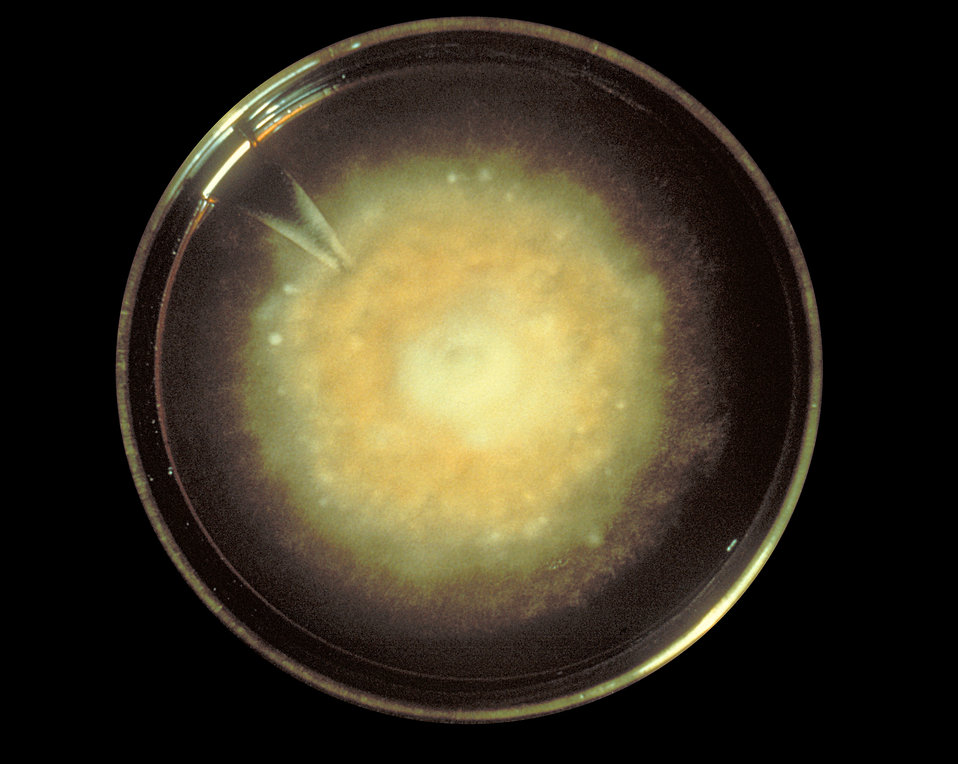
Grown on a Sabouraud's dextrose agar plate, this is a culture of Histoplasma capsulatum fungal organisms, showing the typical fuzzy appearance of the colony.